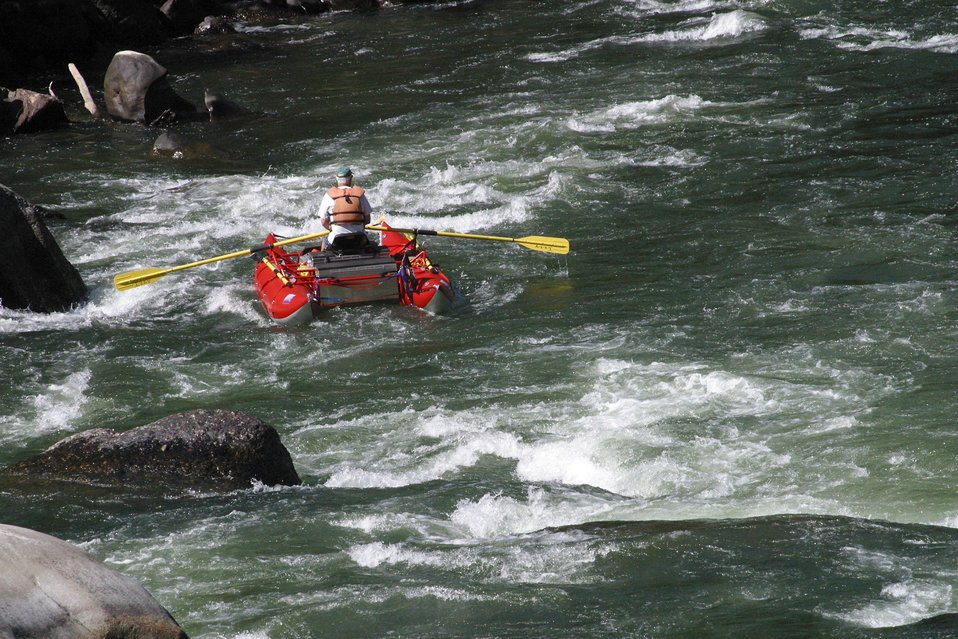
Boaters negotiate Blossom Rapids.